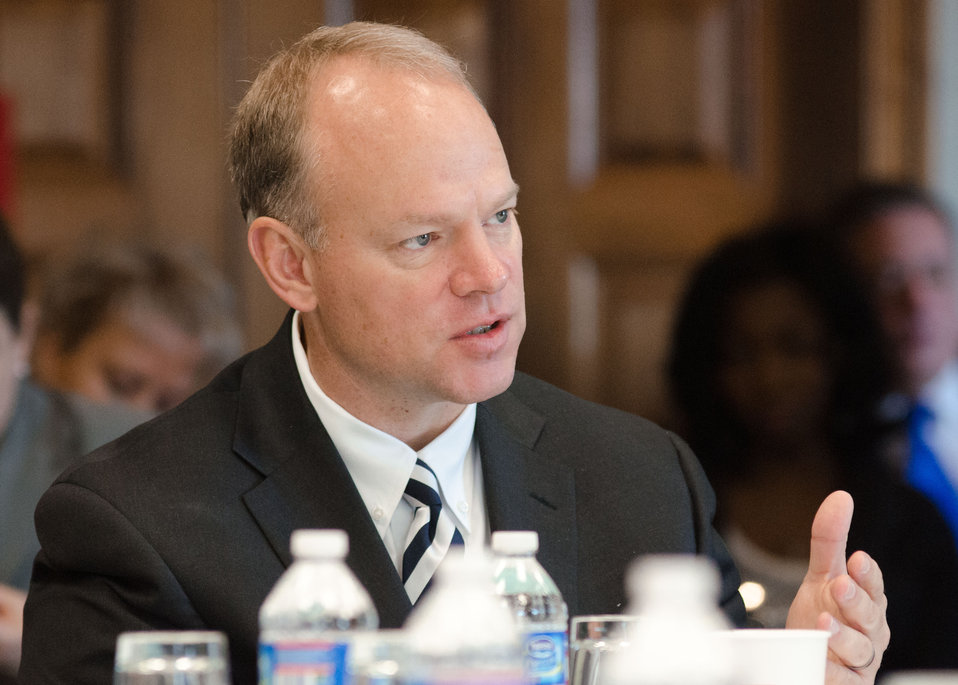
Wyoming - Governor Mat Mead presented issues that are important his state, to Agriculture Secretary Tom Vilsack, Interior Secretary Ken Salazar, Environmental Protection Agency Administrator Lisa Jackson, and Council on Environmental Quality Chair Nancy Sutley, who are in the Lincoln Room, of the United States Department of Agriculture headquarters, in Washington, D.C., on Sunday, February 26, 2012.